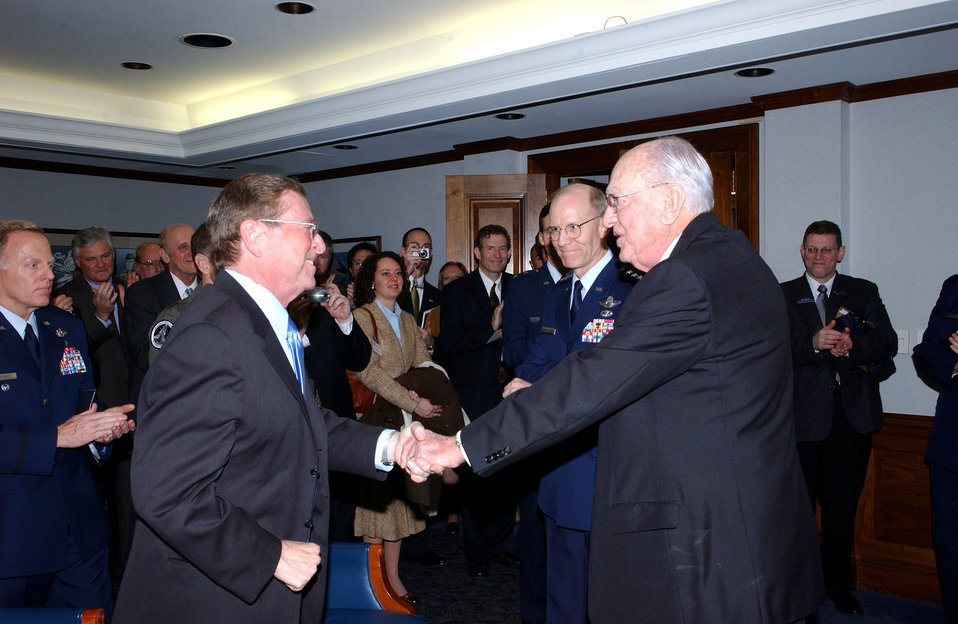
Fisher Distinguished Civilian Humanitarian award

PENTAGON (AFPN) -- New Mexico Sen. Pete Domenici (left) congratulates Ernest O. Stewart Jan. 23. Mr. Stewart is the Air Force's nomination for the Zachary and Elizabeth Fisher Distinguished Civilian Humanitarian Award. Mr. Stewart is an active civic leader for Cannon Air Force Base, N.M., and has supported the Air Force for more than 50 years. Established in 1996, the award honors an individual or organization demonstrating exceptional patriotism and humanitarian concern for members of the U.S. armed forces or their families. Each service branch annually submits nominees. The Fisher House Foundation annually supports more than 8,500 military families of unexpected illness, disease or injury.